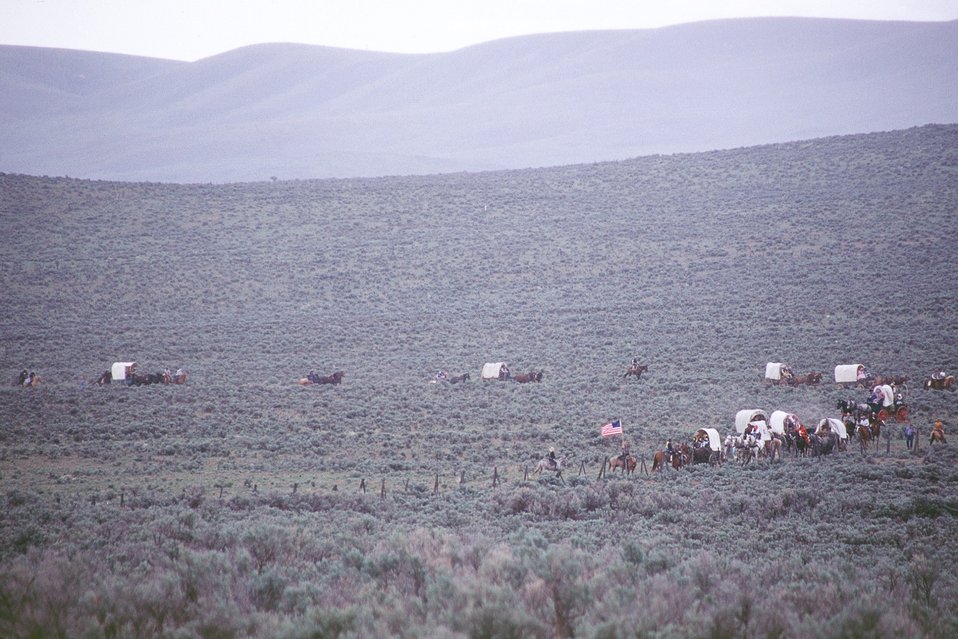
NHOTIC 10th Anniversary, wagon train reenactment. Farshot of covered wagons, pioneers on the Oregon Trail.